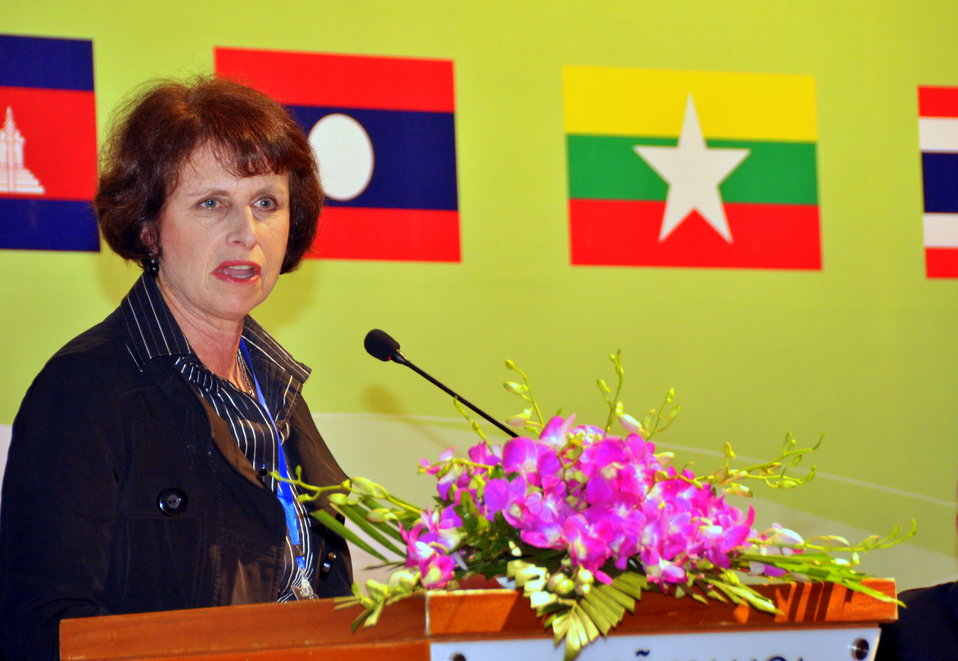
Ms. Lorraine Hariton, Special Representative for Commercial and Business Affairs, U.S. Department of State, gives remarks at the Lower Mekong Initiative Infrastructure Best Practices Exchange in Hanoi

Hanoi: January 14, 2013